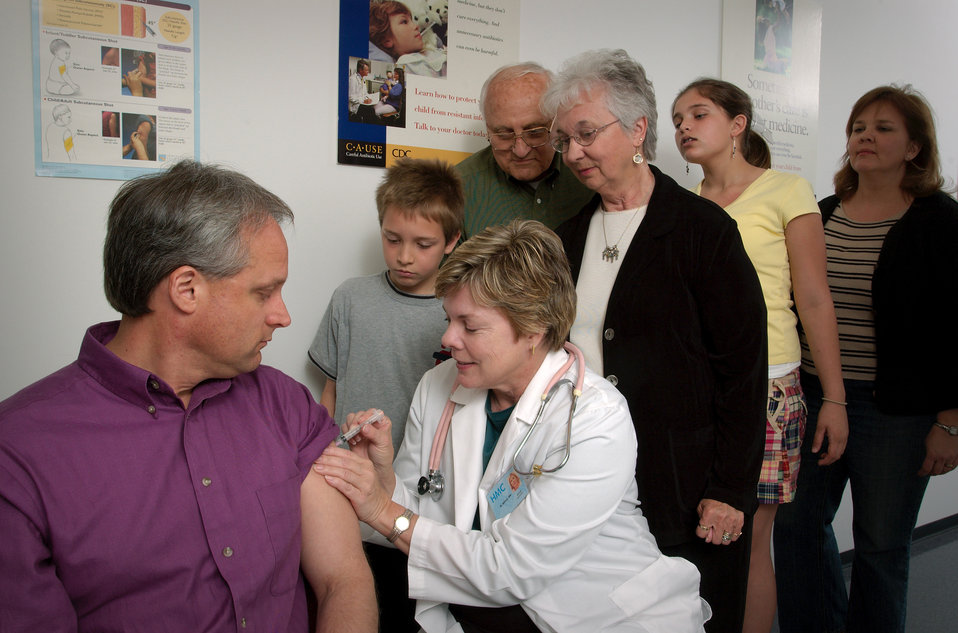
In this 2006 photograph, a man was receiving an intramuscular injection into the shoulder muscle of his left arm from a trained, registered nurse (RN), while his family was observing from over the nurse's shoulder.